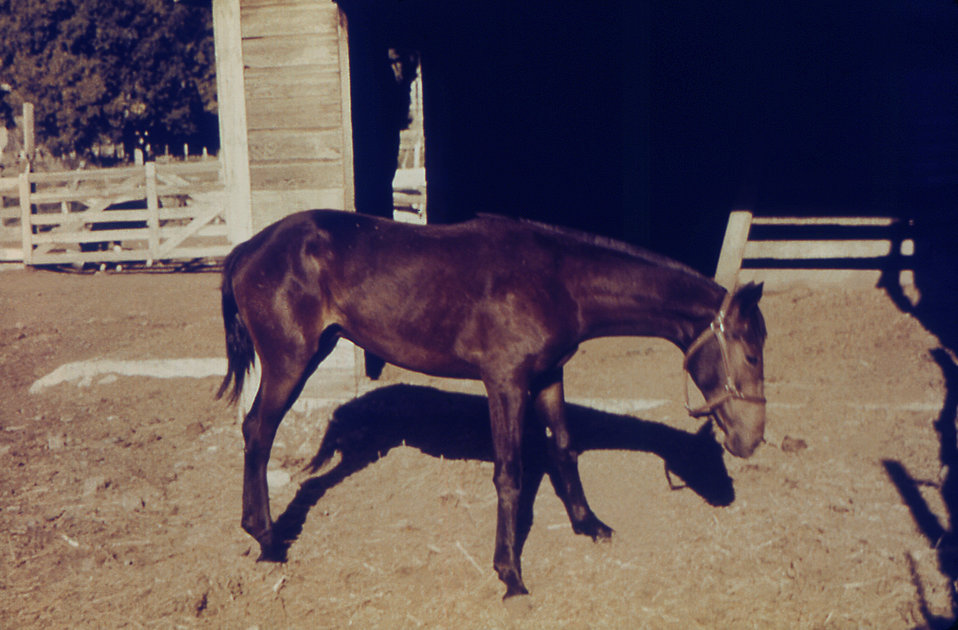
This horse is displaying the typical stance having been afflicted with mosquito-borne Western Equine Encephalitis (WEE) virus. Note the characteristic head droop.